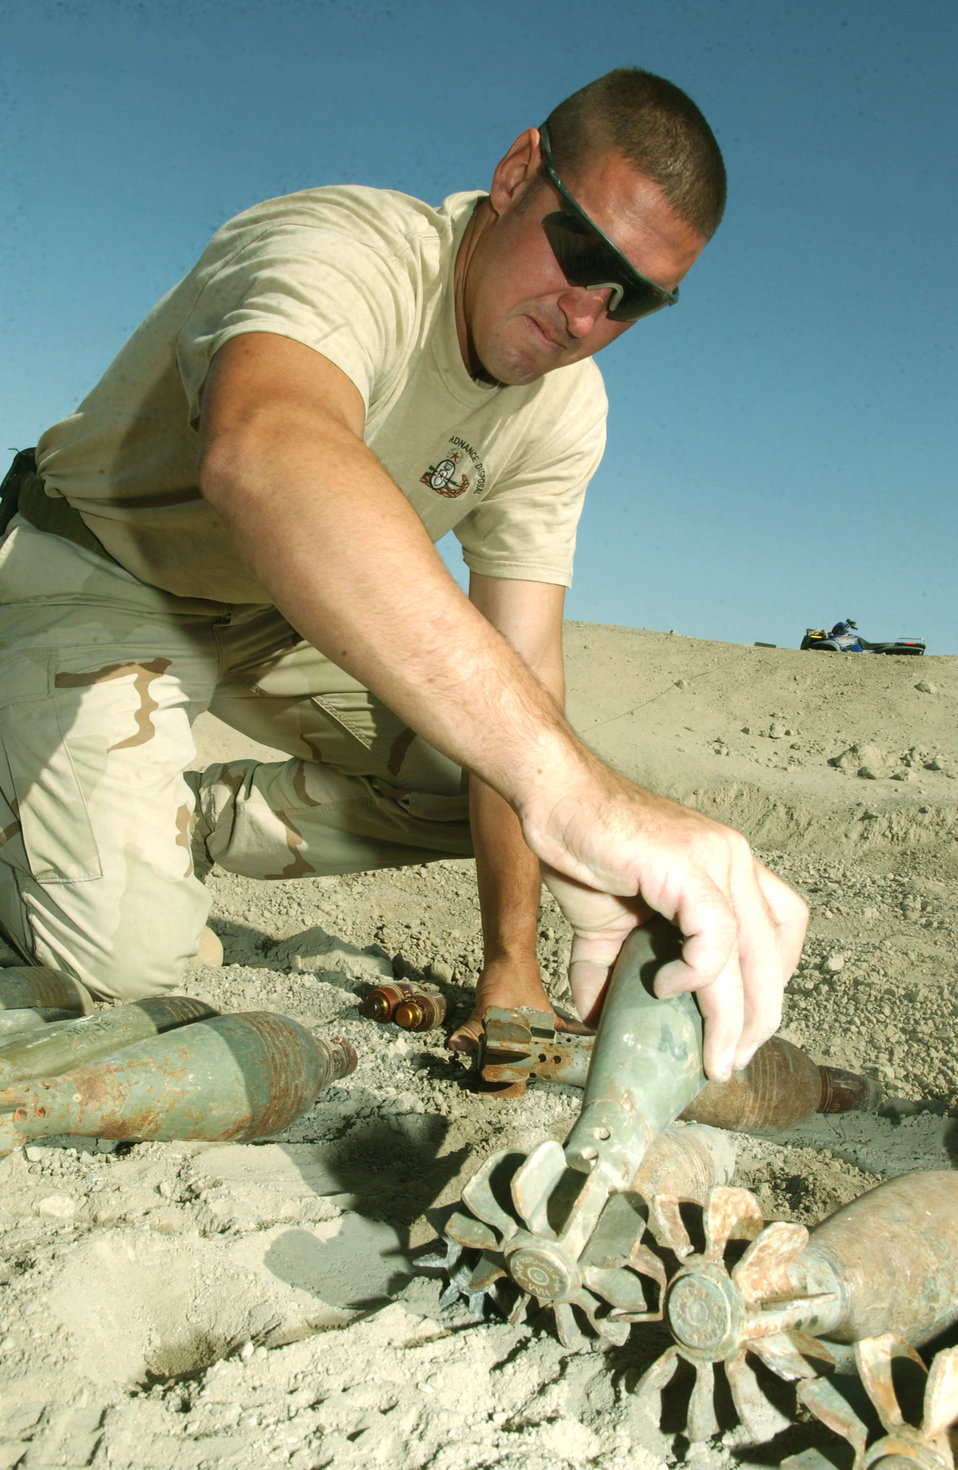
EOD eliminates 'explosive' problems

TALLIL AIR BASE, Iraq -- Tech. Sgt. David Featherstun lines up Soviet, O-832 DU, 82 mm, high-explosive filled mortars for demolition. Featherstun is part of the 332nd Expeditionary Civil Engineer Squadron's explosive ordnance disposal flight here.